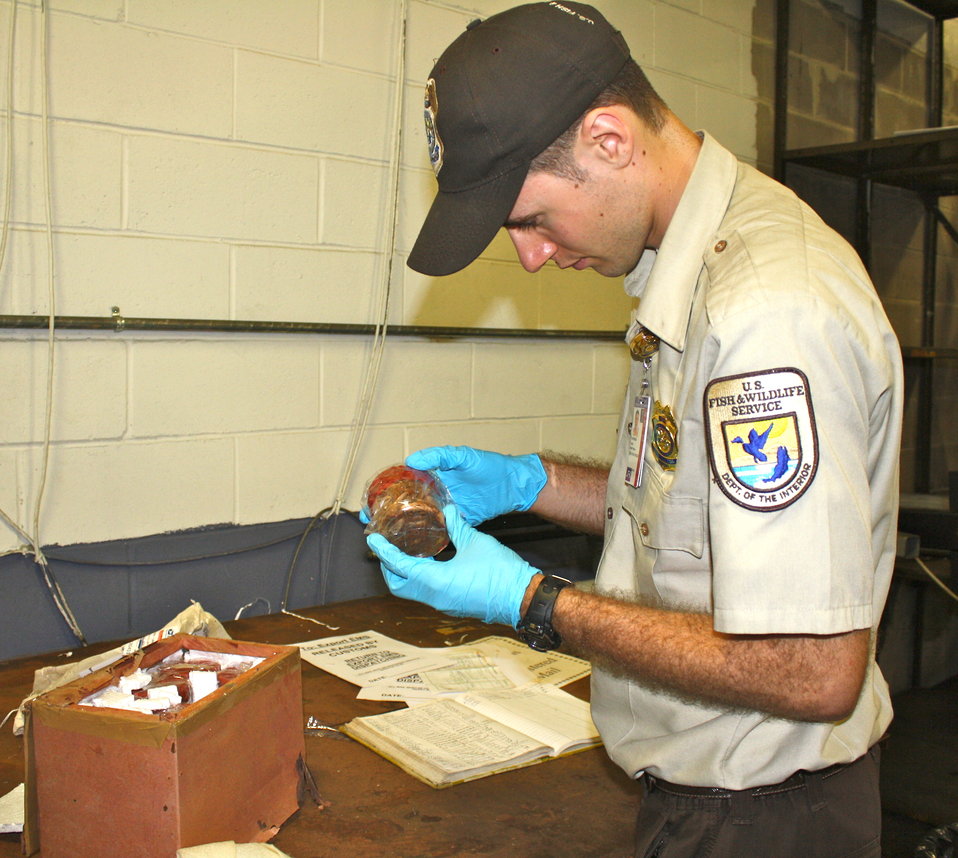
Inspector looks at a shipment of fiddler crabs

Inspector from the Valley Stream, N.Y. Office of Law Enforcement looks at a shipment of fiddler crabs at a U.S. Postal Service facility.